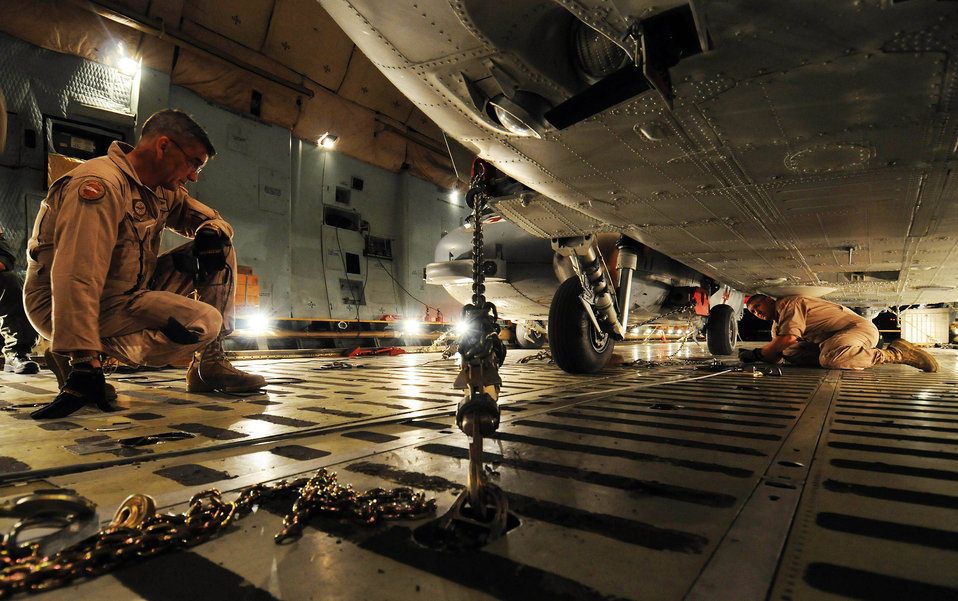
Just the right fit

Senior Master Sgt. Randall Shafer, a loadmaster with the West Virginia Air National Guard's 167th Airlift Wing, observes as Staff Sgt. Justin McDonald ties down an MH-60S Knighthawk March 13 in the cargo bay of a C-5 Galaxy at Andersen Air Force Base, Guam. A team of Airmen from the 167th AW and the 734th Air Mobility Squadron at Andersen AFB and Sailors from Helicopter Sea Combat Squadron TWO-FIVE at Guam's A.B. Won Pat International Airport loaded three MH-60S and two SH-60H helicopters for transport to Naval Air Station North Island in San Diego.